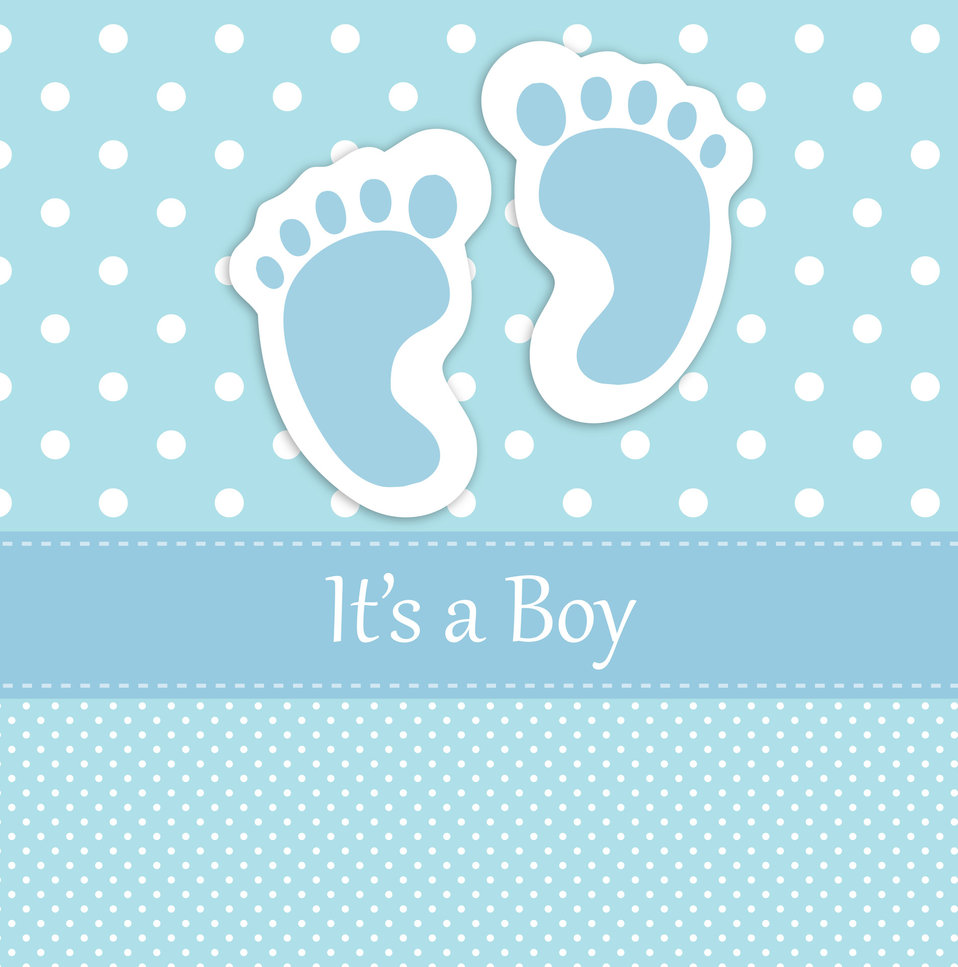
Baby boy footprints card

Blue polka dots baby boy footprints card announcement template.